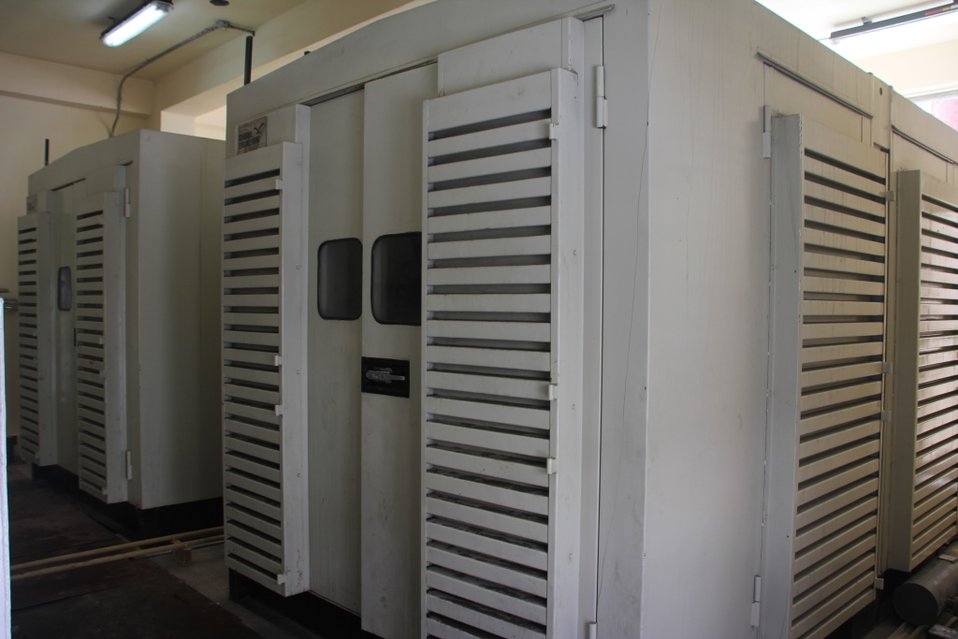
Newly installed generator supplies the Salang tunnel with power (November 26, 2013)